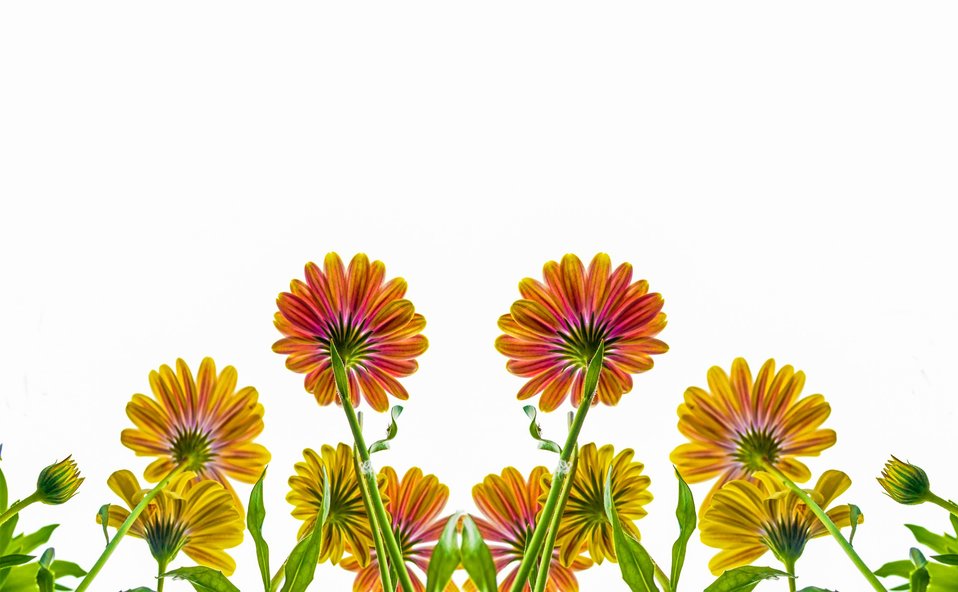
Flowers isolated on white background.